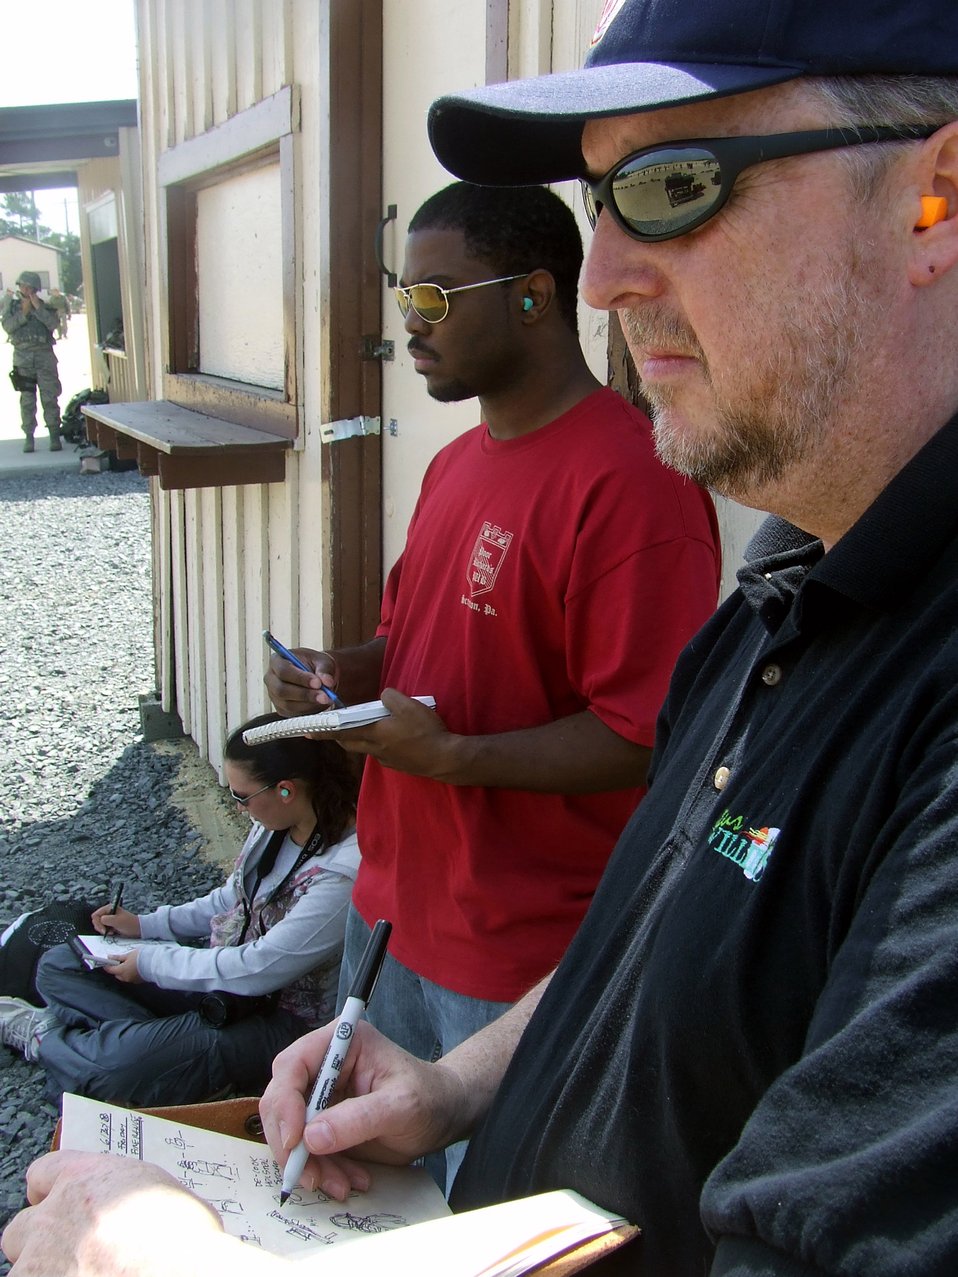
Air Force Art Program artists visit USAF EC

Artists Tatiana El Khouri, Steven Walker and William Frake sketch a scene during a visit to a Fort Dix, N.J., range to document the Air Force Phoenix Warrior Training Course for the Air Force Art Program last month. They were three of five artists visiting the U.S. Air Force Expeditionary Center and its courses to create future works of art for the program.